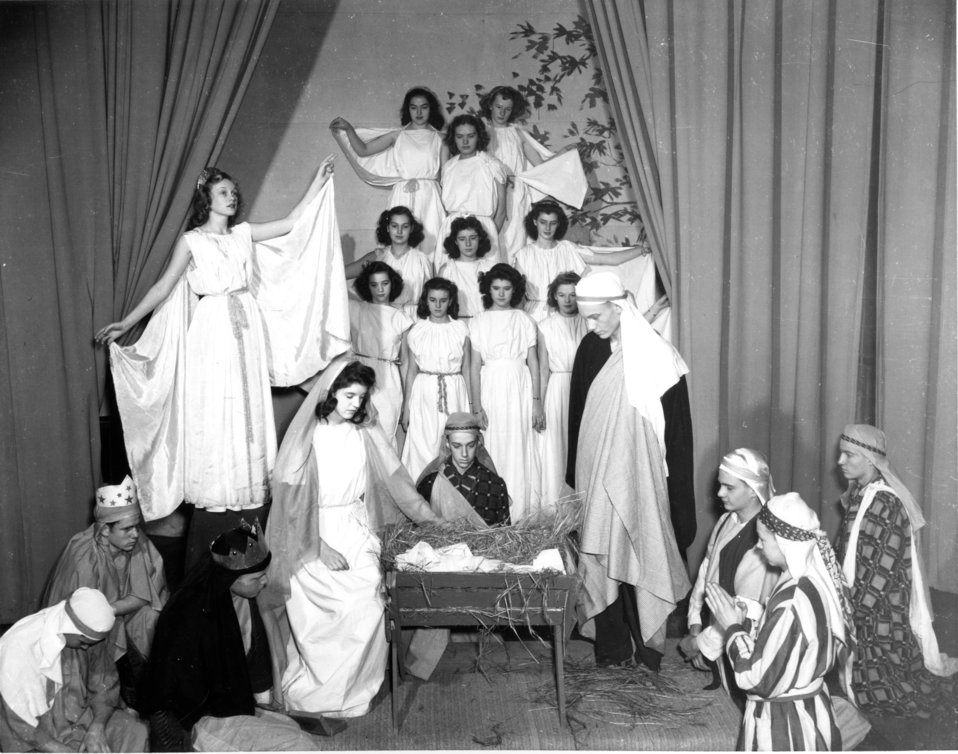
Schools at Oak Ridge